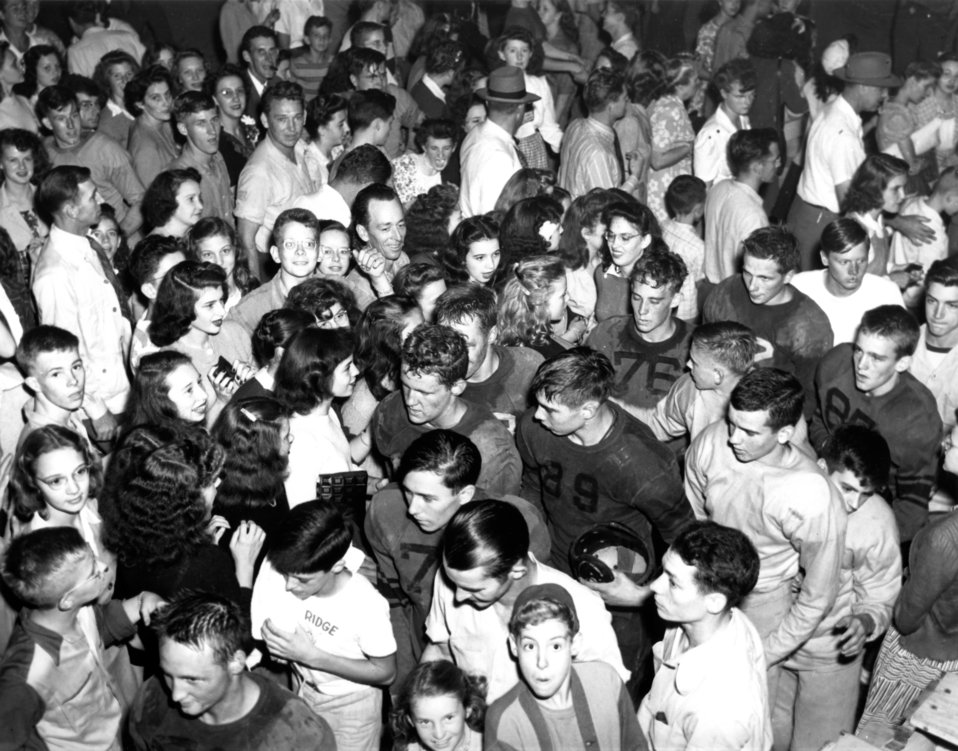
Schools at Oak Ridge